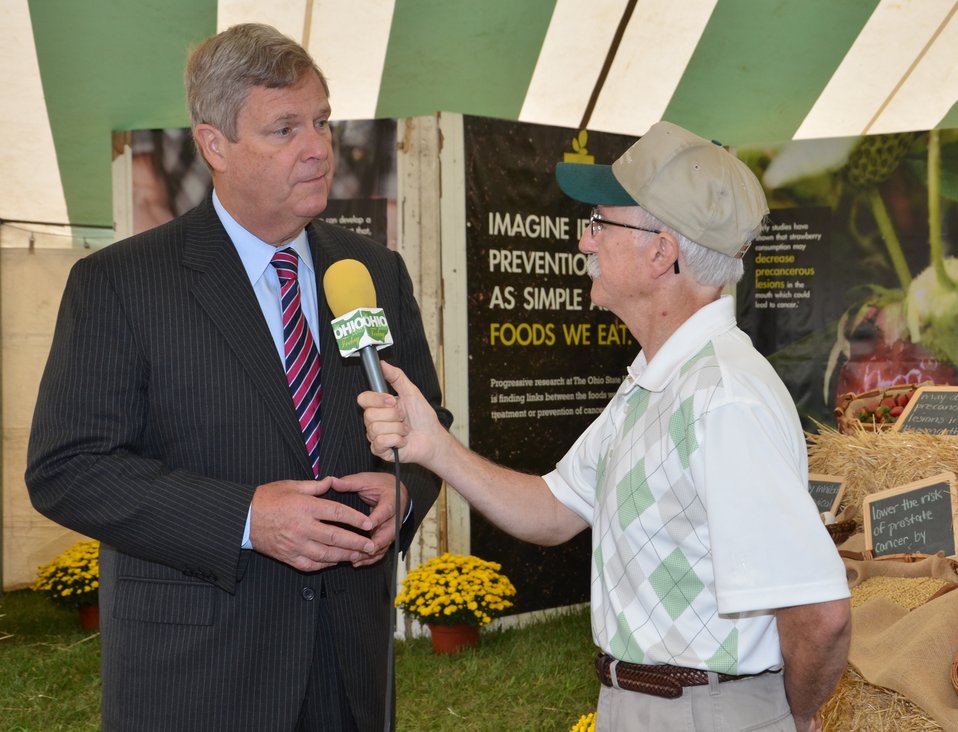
Agriculture Secretary Tom Vilsack answers questions from an In Ohio Country Today reporter at the Farm Science Review, at Ohio State University in Mansfield, OH., on Tuesday, September 18, 2012.